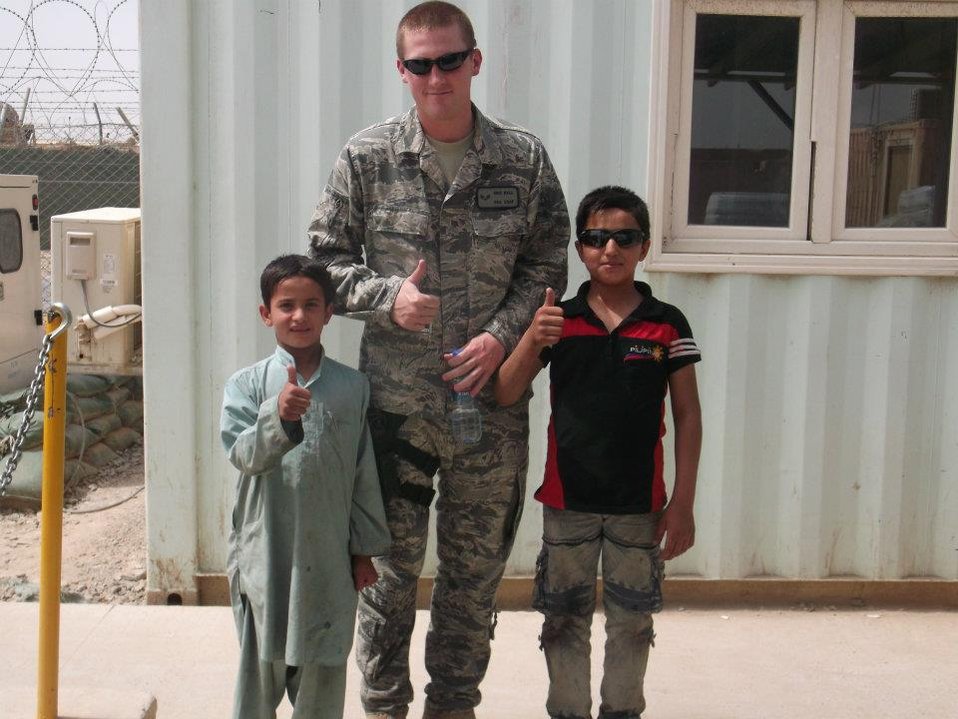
Reading and writing forges friendships

Senior Airman Eric Ball, (center), is flanked by two Afghani boys he tutored in the basics of reading, writing and English during his six-month deployment to Afghanistan from October 2011 to May 2012. Ball is an Arnold Engineering Development Center financial services technician.